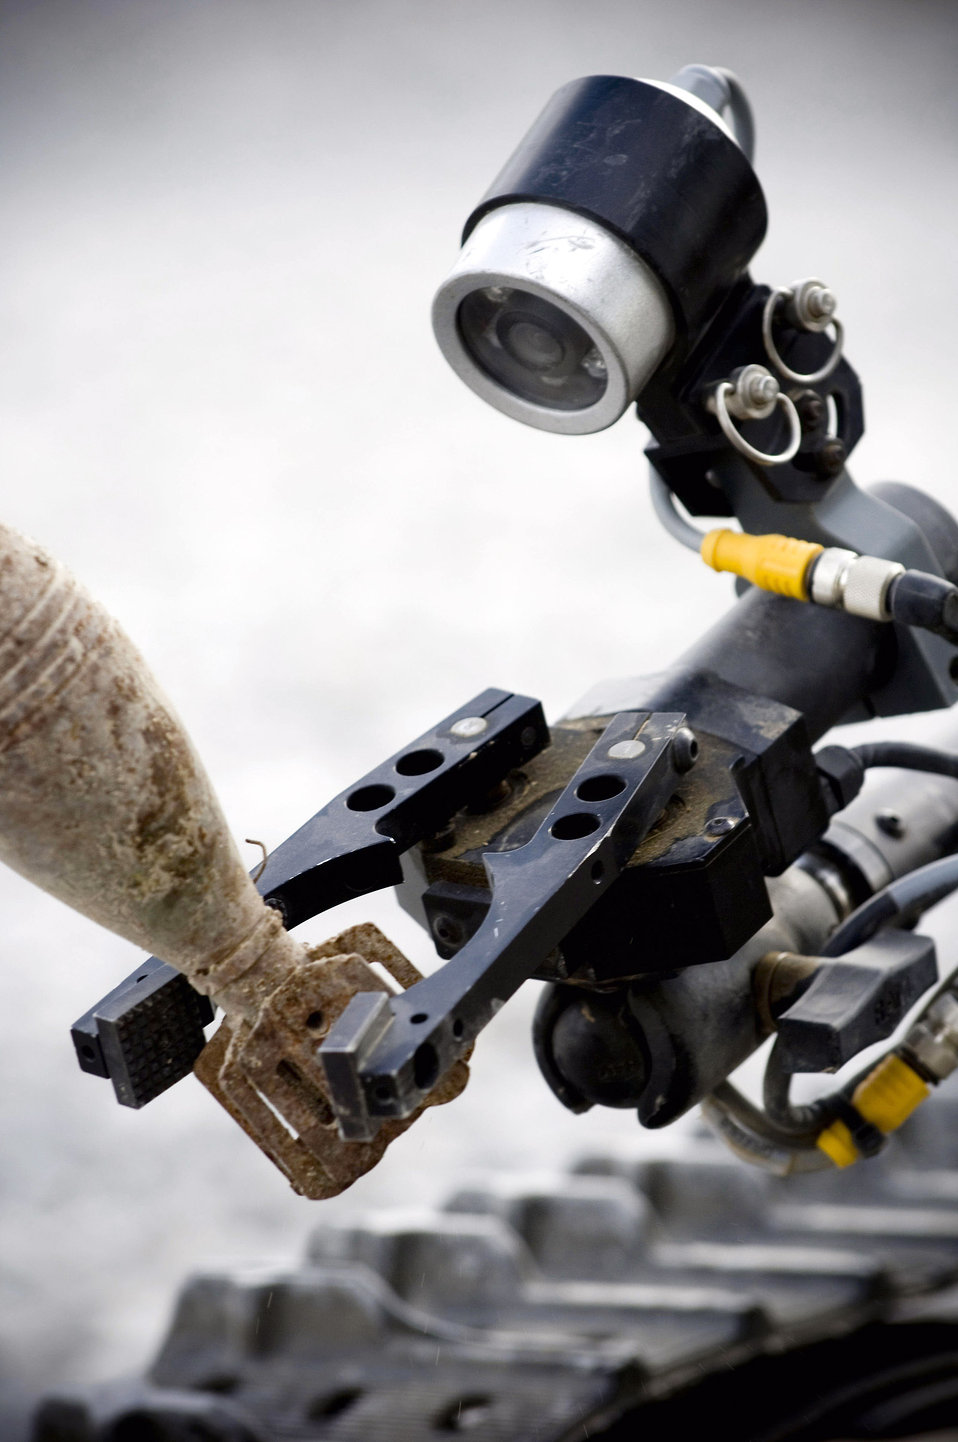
Airmen combat explosive threats in Afghanistan

A Talon explosive ordnance disposal robot picks up a simulated piece of unexploded ordnance Oct. 26 at Kandahar Airfield, Afghanistan. Air Force EOD teams in Afghanistan respond to 46 percent all incidents involving explosives -- helping to keep not just Airmen safe, but also coalition forces of all branches and nationalities.